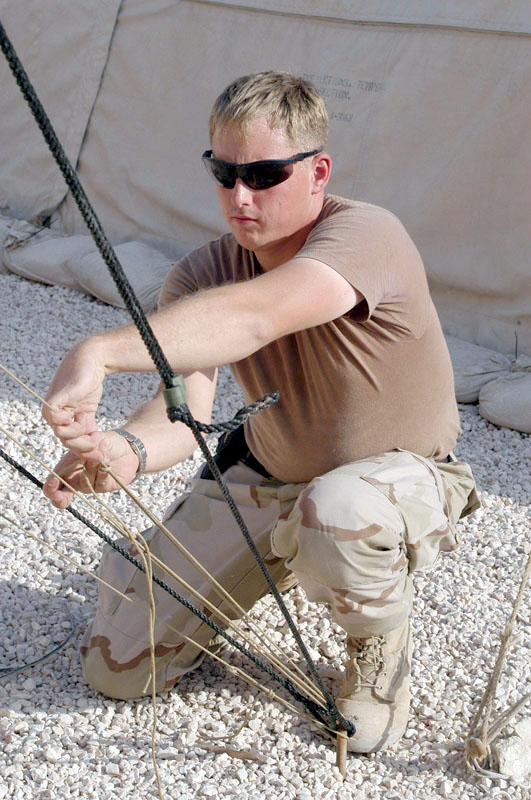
Civil engineers' work noticed every day

SOUTHWEST ASIA -- Senior Airman Christopher Holmes tightens a support rope on a replacement tent cover at a forward-deployed location. Airman Holmes is a structural specialist with the 379th Expeditionary Civil Engineer Squadron.